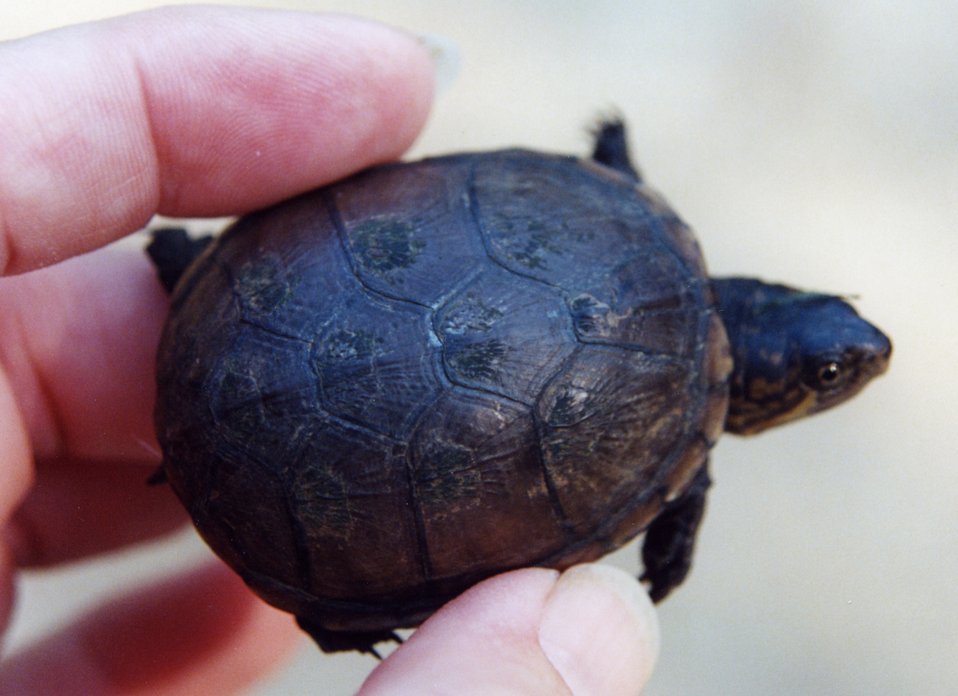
Juvenile mud turtle.